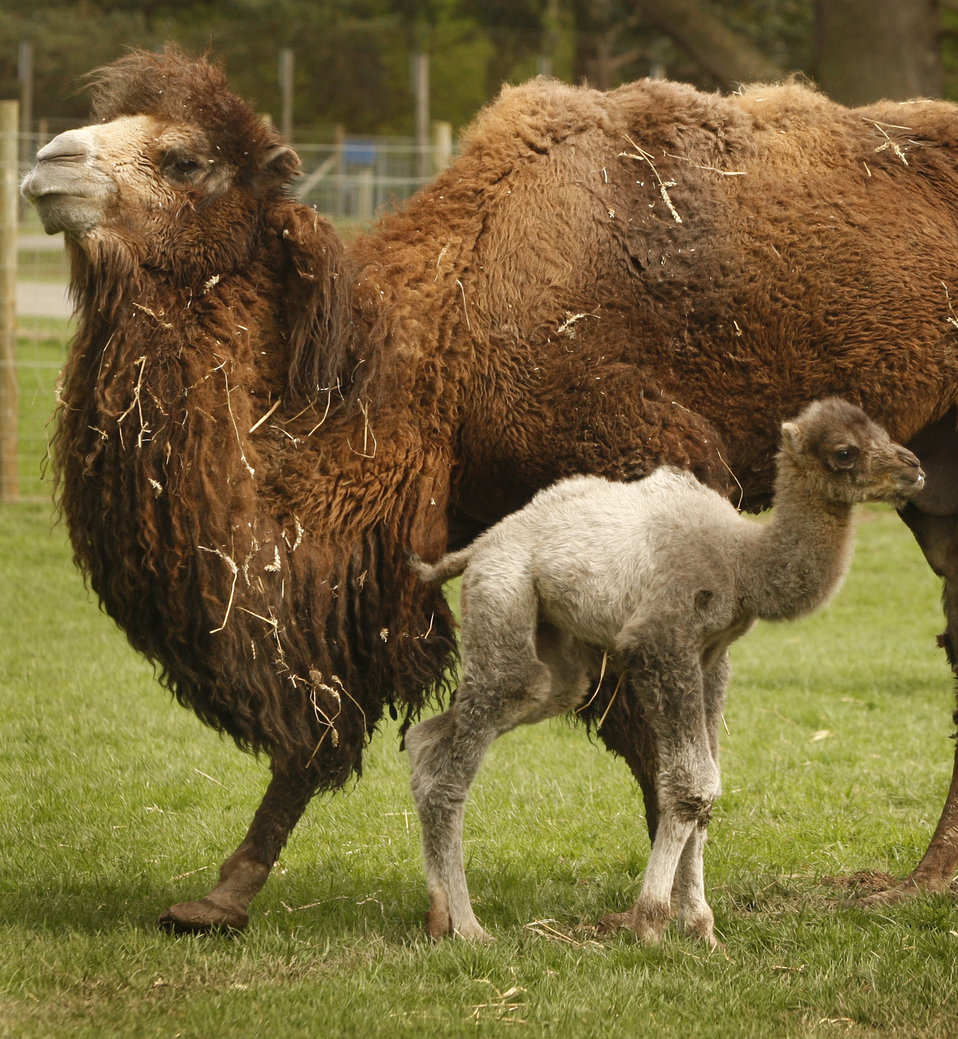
Bactrian camel calf with mother